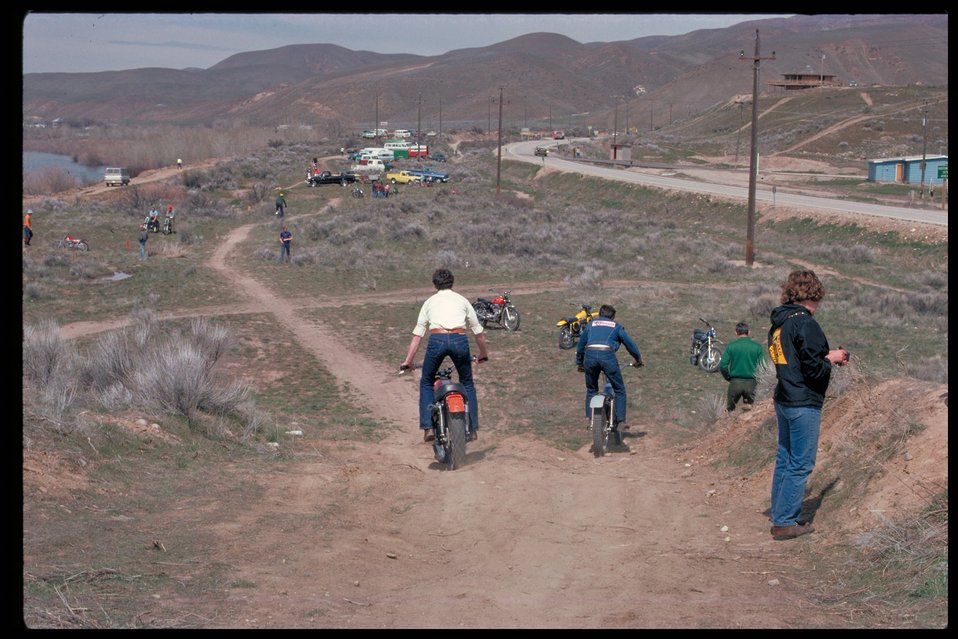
Boise Trails Event Boise Front OHV Off Highway Vehicles Four Rivers Field Office LSRD Lower Snake River District